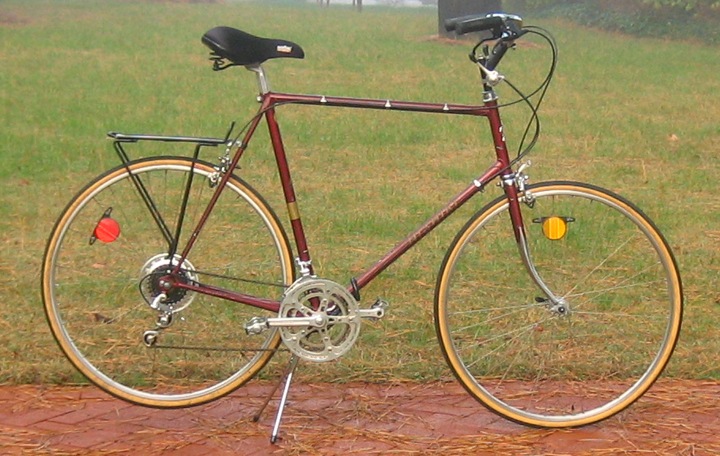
1977 Nikishi International